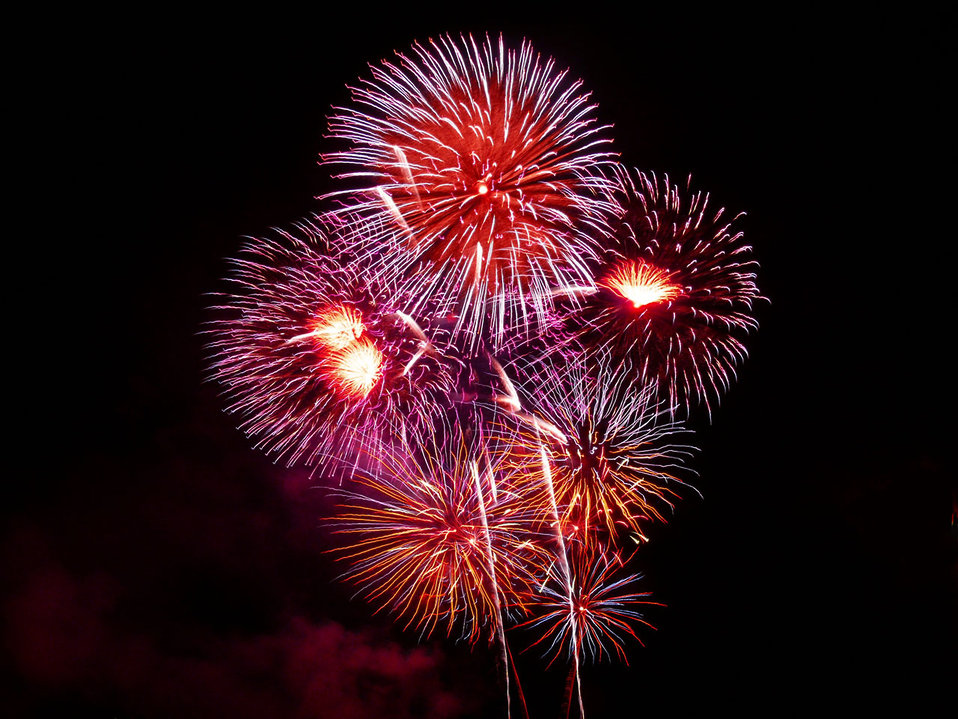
Fireworks 1.